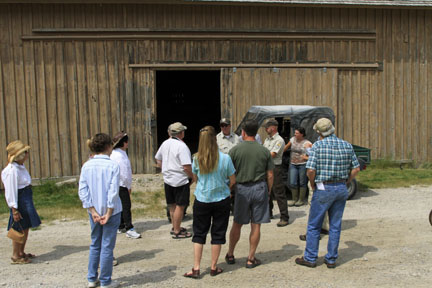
A Caravan-Style Tour

National Elk Refuge Irrigation Specialist Kirk Hayenga and Biologist Eric Cole led a public tour as part of the refuge's centennial weekend. Participants drove caravan-style onto the refuge to learn about the supplemental feeding program, view a feed shed where pelletized alfalfa is stored, and view the refuge's new irrigation system installed to expand the production of natural forage.

Credit: USFWS / Jim Crabb, National Elk Refuge volunteer